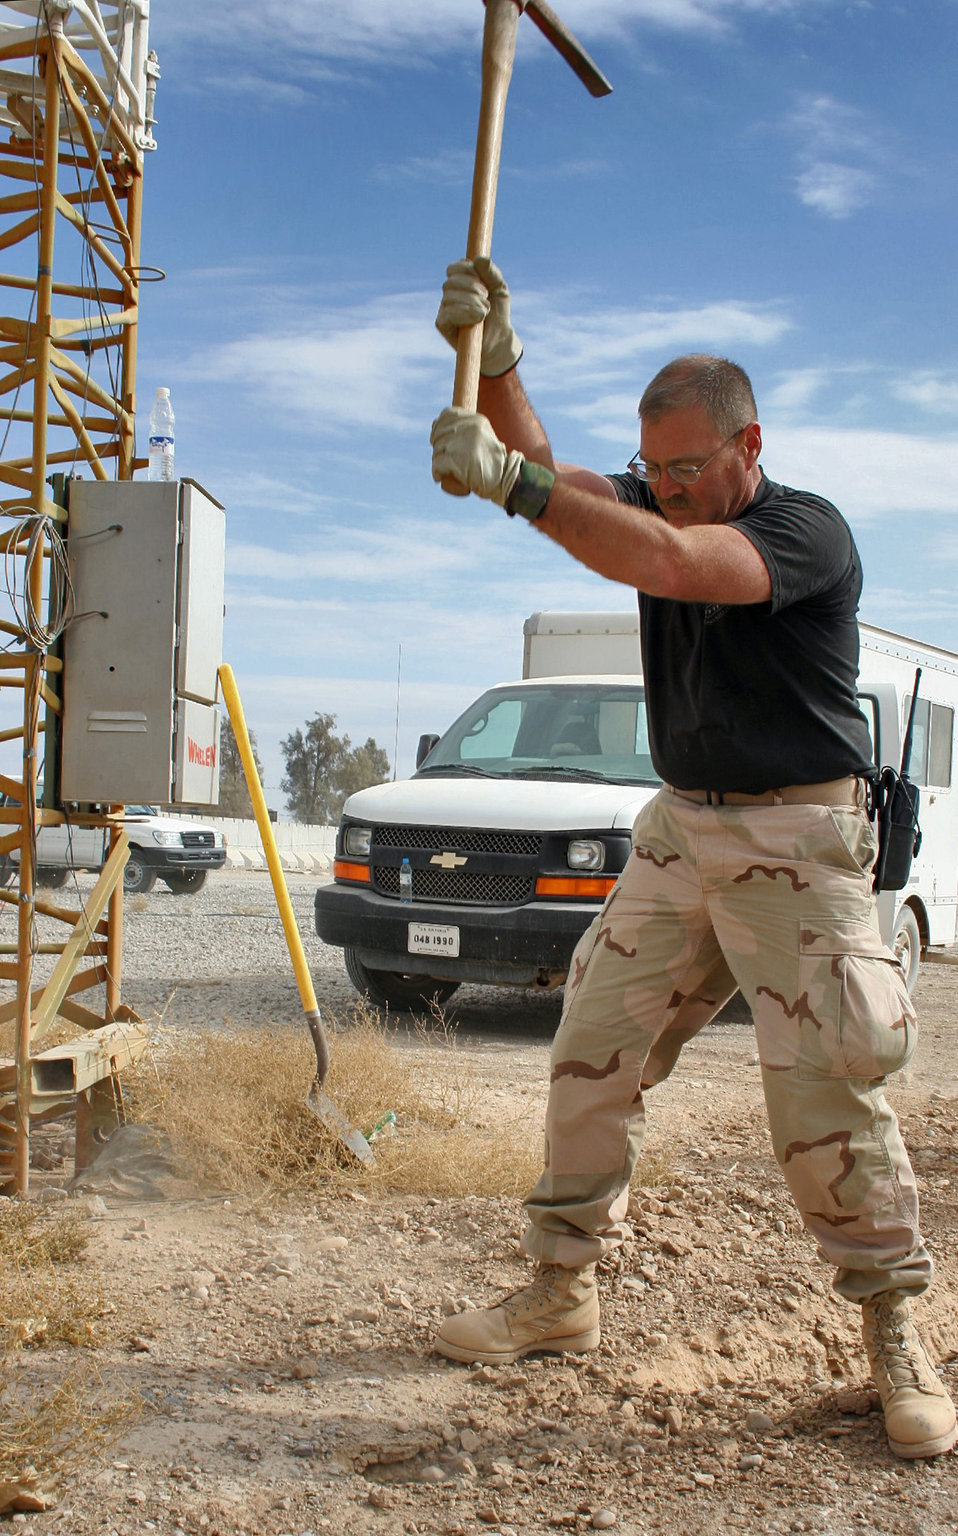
Communicators

KANDAHAR AIR FIELD, Afghanistan (AFPN) -- Master Sgt. Richard Poole helps dig a ditch for relocating 2,400 feet of radar fiber and computer network and phone cable. As U.S. forces prepare to return the airport terminal and tower to Afghan control, combat communicators have installed more than a mile of copper and fiber cabling. Sergeant Poole is the 451st Air Expeditionary Group support communications section noncommissioned officer in charge of maintenance. Sergeant Poole is an Air National Guardsman deployed from Hot Springs Memorial Air Field in Hot Springs, Ark.